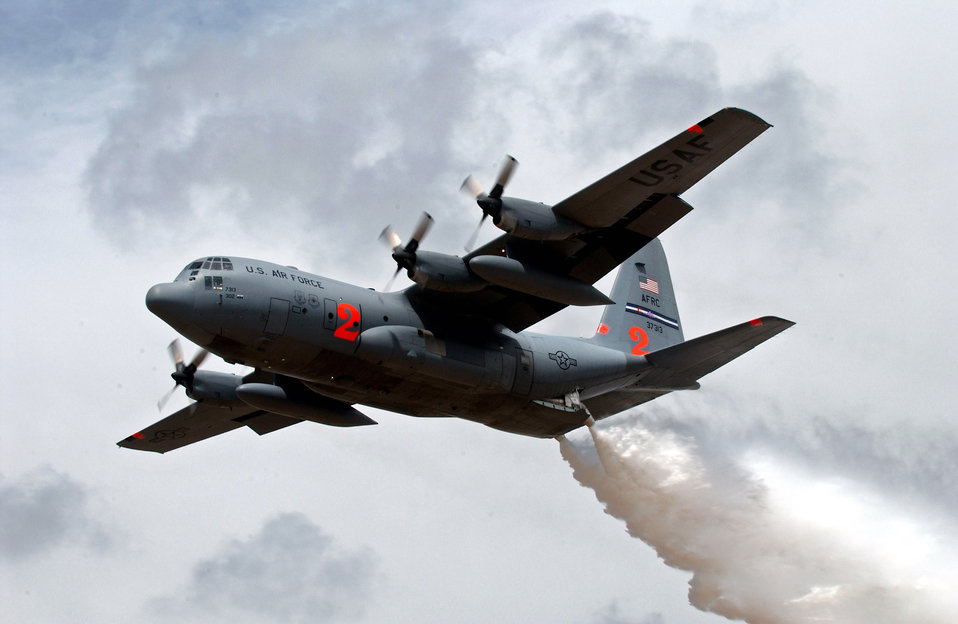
Air Force aerial firefighters train in New Mexico

A C-130 Hercules drops water May 2 at the Albuquerque Air Tanker Base during annual Modular Airborne Fire Fighting System training in New Mexico. C-130 aircrews from the Air Force Reserve Command unit and three Air National Guard units trained with the MAFFS delivery system in preparation for the 2007 wild fire season. The C-130 is from the 302nd Airlift Wing at Peterson Air Force Base, Colo.